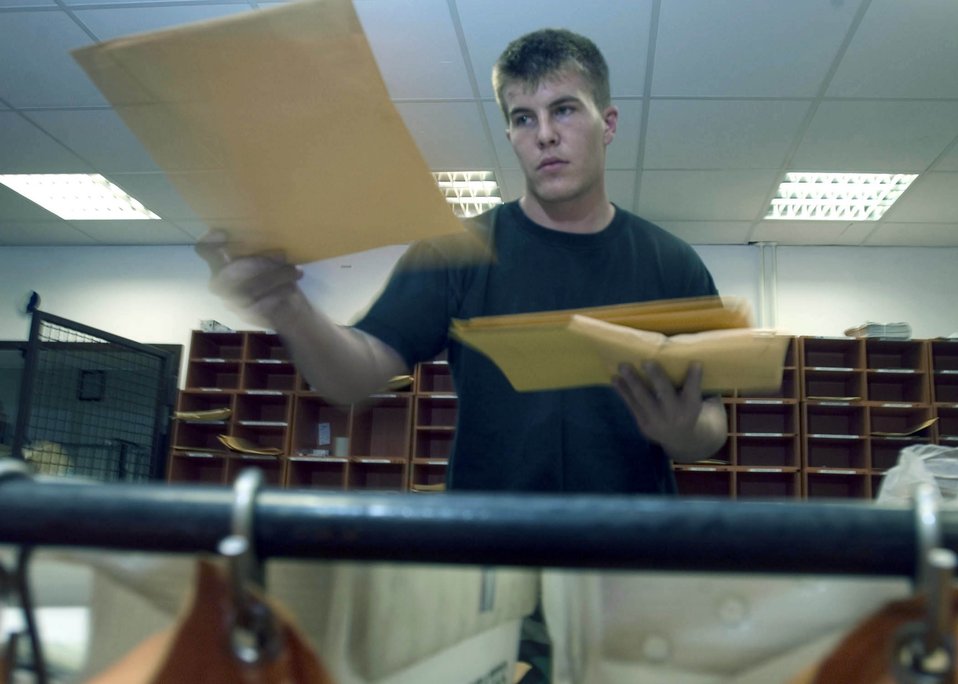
Sorting it out

RAMSTEIN AIR BASE, Germany -- Airman 1st Class Clayton Hobbs sorts through the morning mail at the 86th Communication Squadron's official mail center here. He is a postal clerk at the largest official mail center outside of the continental United States.